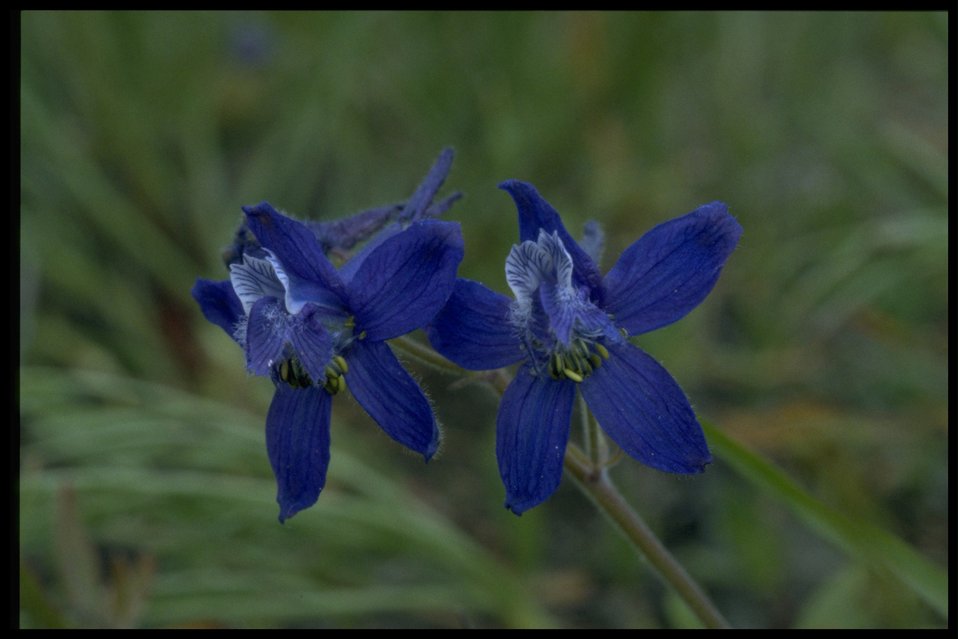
Closeup shot of upland larkspur (Delphinium nuttallianum).